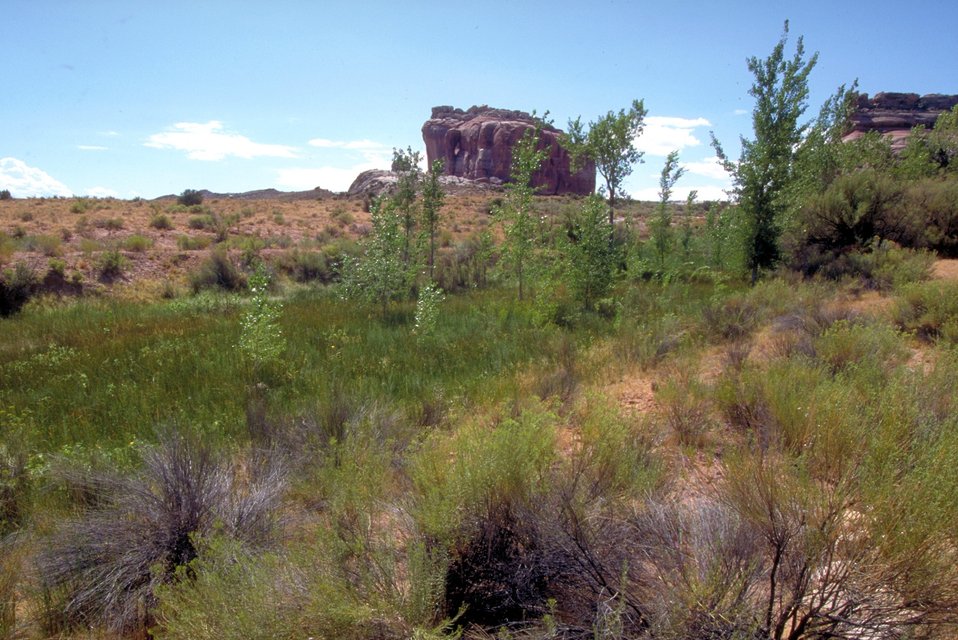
Riparian area next to Halfway House Stage Station near Moab, Utah.